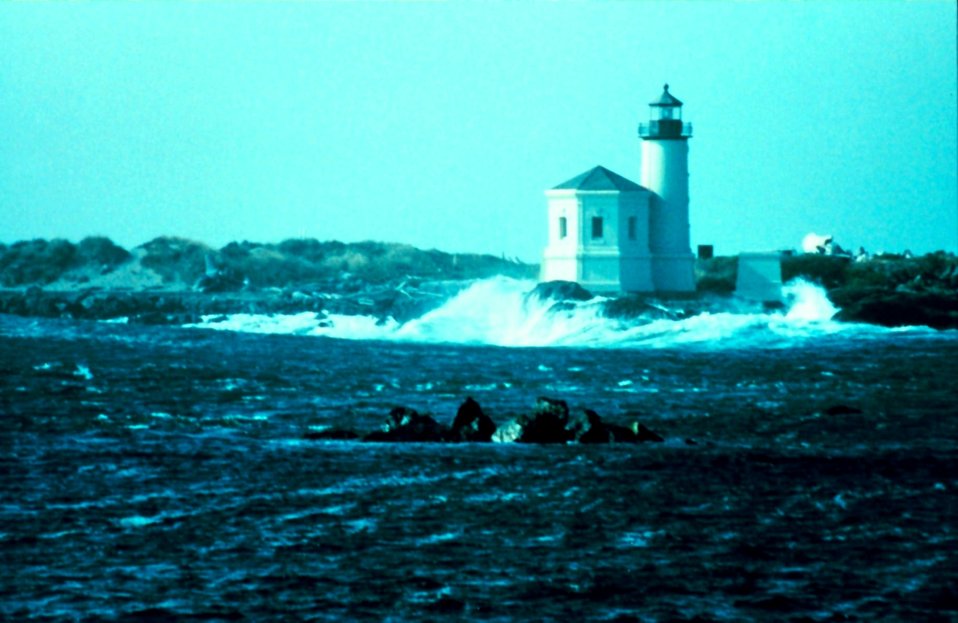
The lighthouse at Coquille River Entrance.